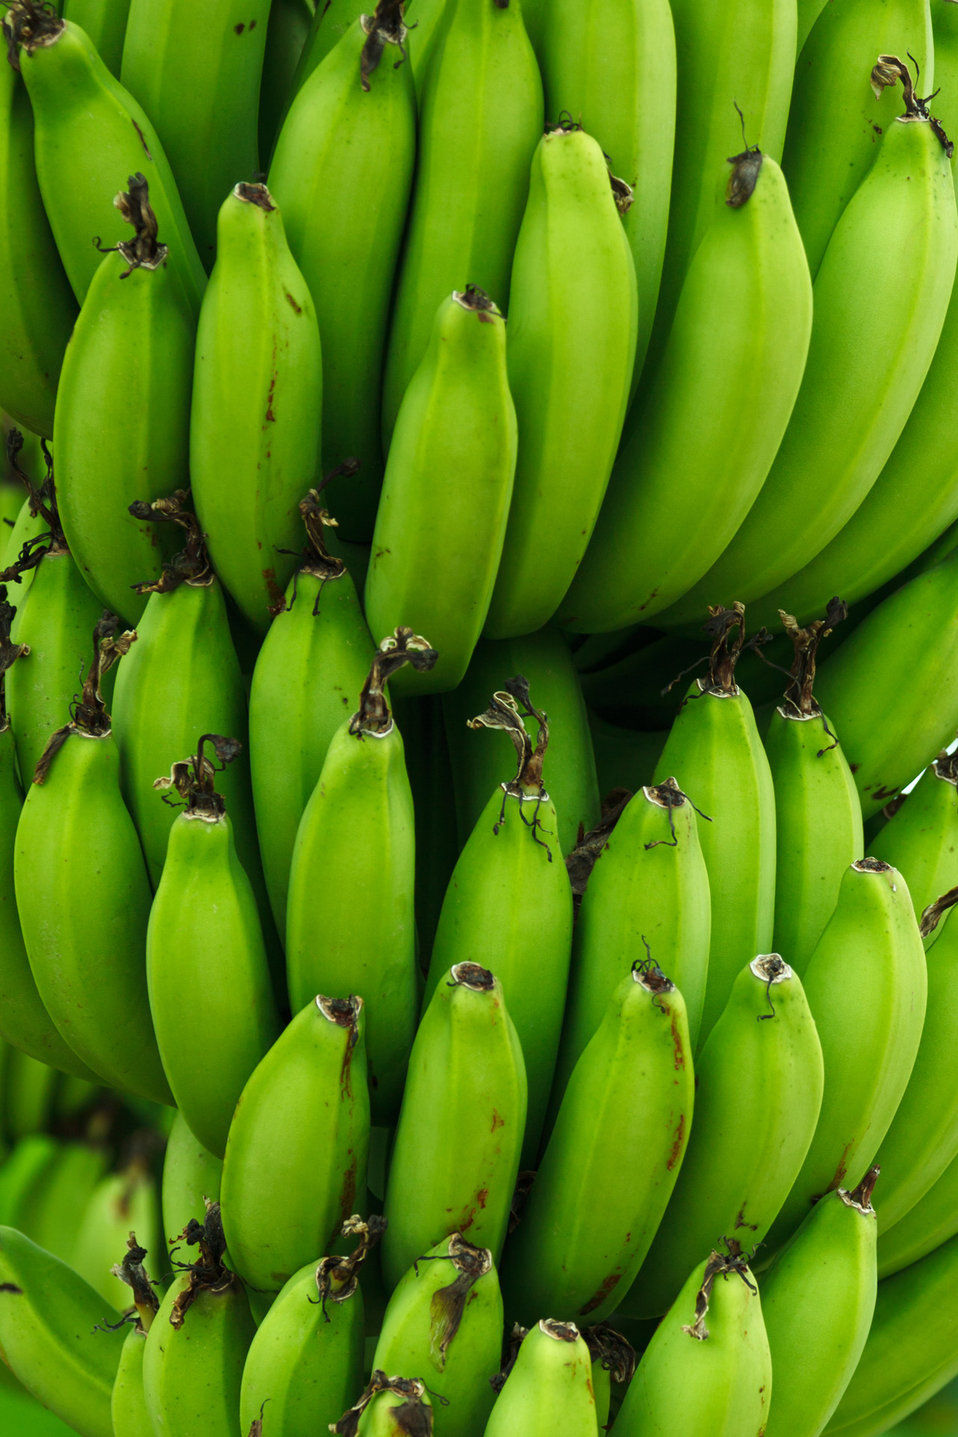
Green bananas background

Green bananas growing on tree.